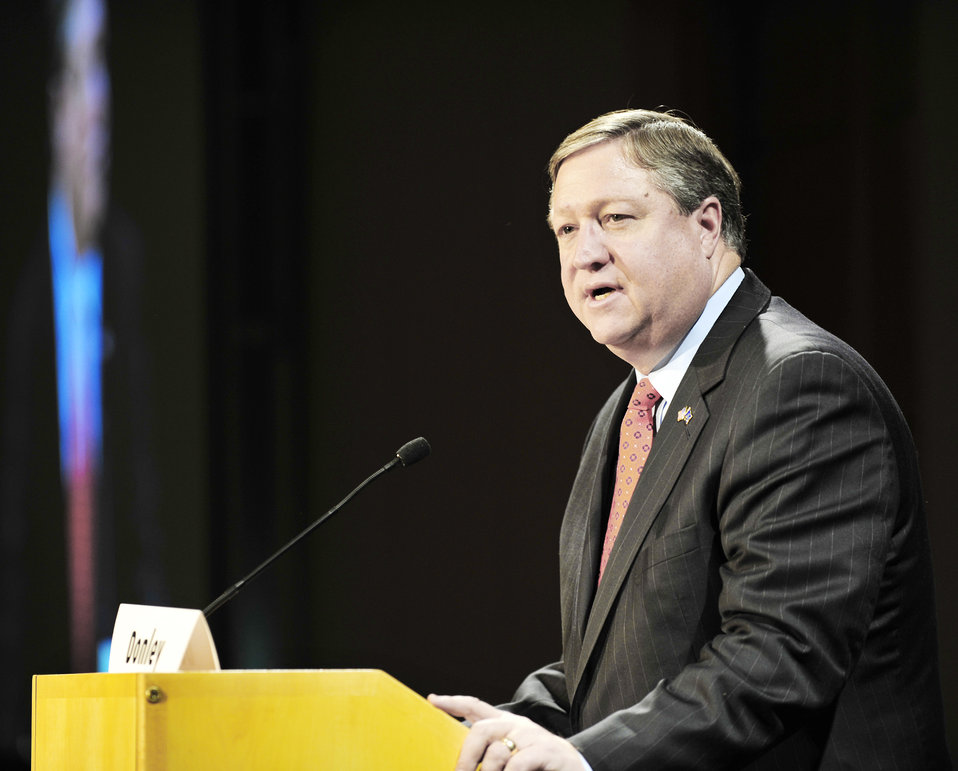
SECAF at Cyber Conference

Air Force Secretary Michael Donley delivers his keynote address on air, space and cyberspace power in the 21st century Jan. 20, 2010, to attendees at the 38th Institute for Foreign Policy Analysis-Fletcher Conference on National Security Strategy and Policy in Washington, D.C., Jan. 20.